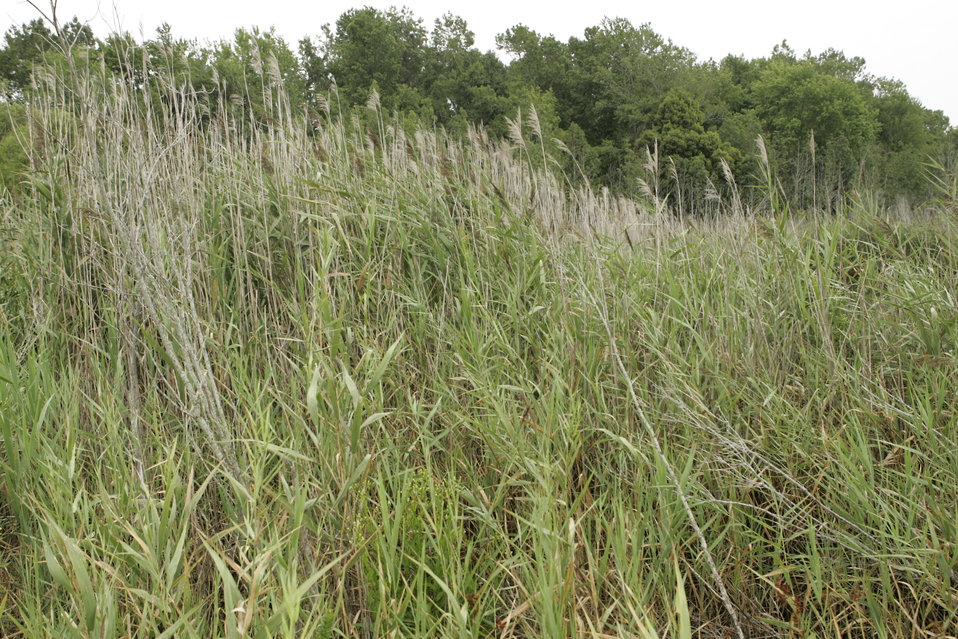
phragmites

An aggressive perennial wetland grass called Phragmites, or common reed, outcompetes native plants and displaces native animals at Pocosin Lakes National Wildlife Refuge in North Carolina.